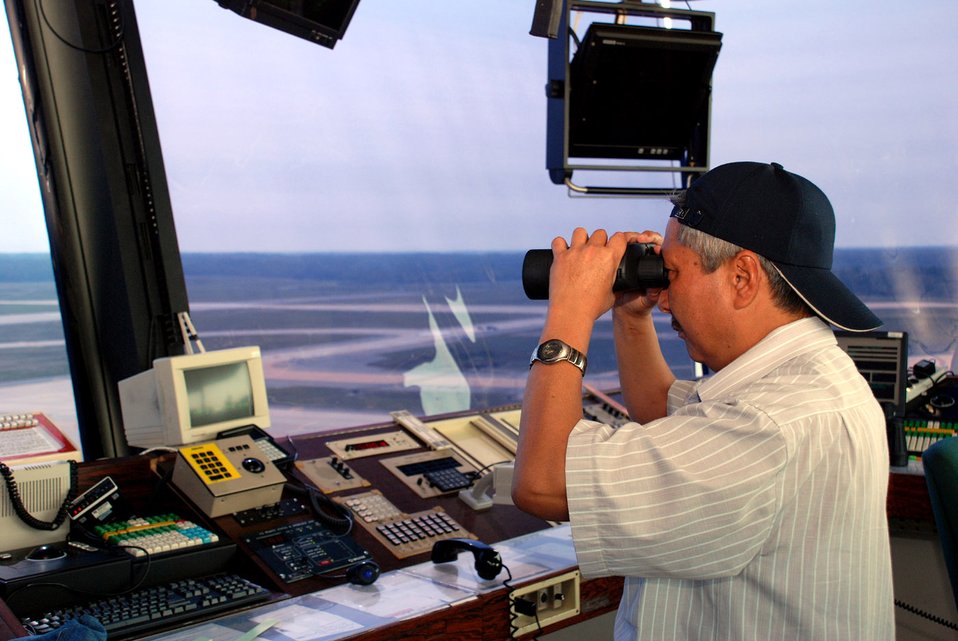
Kyrgyz controllers see stateside air traffic operations

Akhmed Abdyramanov scans the flightline to get a sense of the airfield management operations Sept. 6 at Andrews Air Force Base, Md. Helicopters and fixed-wing aircraft share the Andrews AFB air space, which provides additional challenges for air traffic controllers. Mr. Abdyramanov is a a senior air traffic controller with Kyrgyz air navigation. The Kyrgyz controllers had the opportunity to participate in a U.S. orientation trip Sept. 3 to 17. The seven controllers visited a number of air traffic control facilities in the United States including Federal Aviation Administration facilities, Andrews AFB and Keesler AFB, Miss., home of the military air traffic control school.